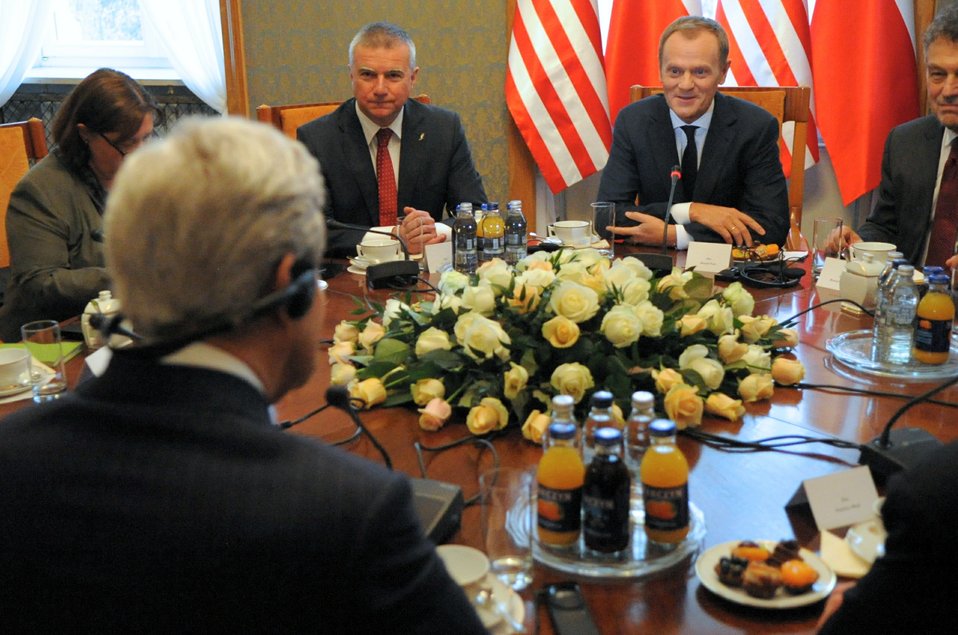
Secretary Kerry Meets With Polish Prime Minister Tusk

U.S. Secretary of State John Kerry listens to a translation of Polish Prime Minister Donald Tusk as he speaks at the outset of their meeting at the Chancery in Warsaw, Poland, on November 5, 2013.